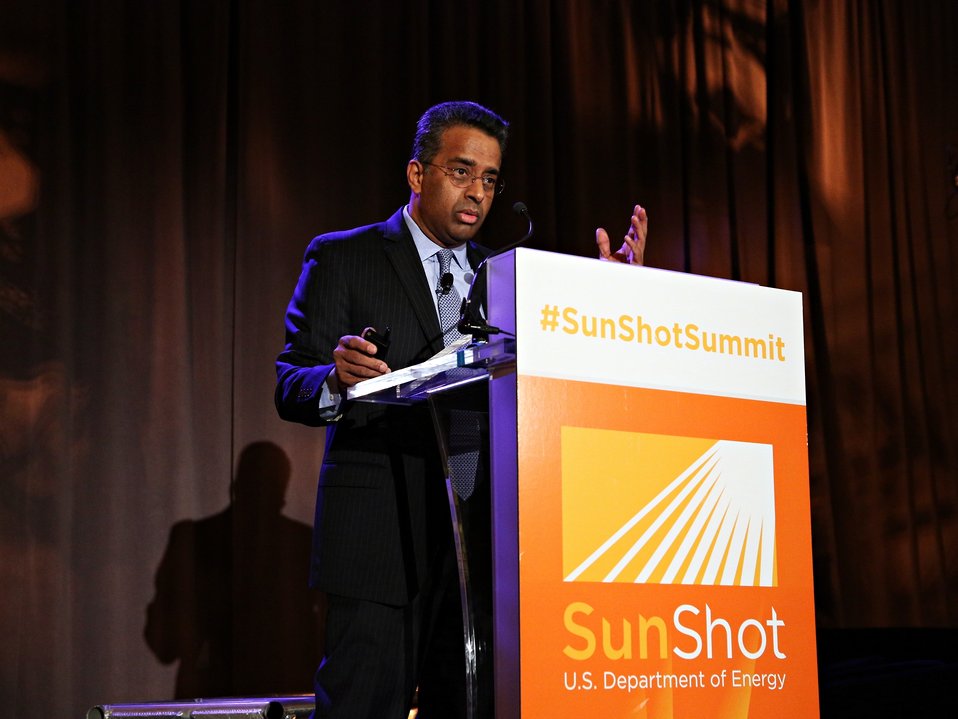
Day 2 Keynote Session 3

Dr. Ramesh, Deputy Director for Science and Technology for Oak Ridge National Laboratory provides a keynote address.